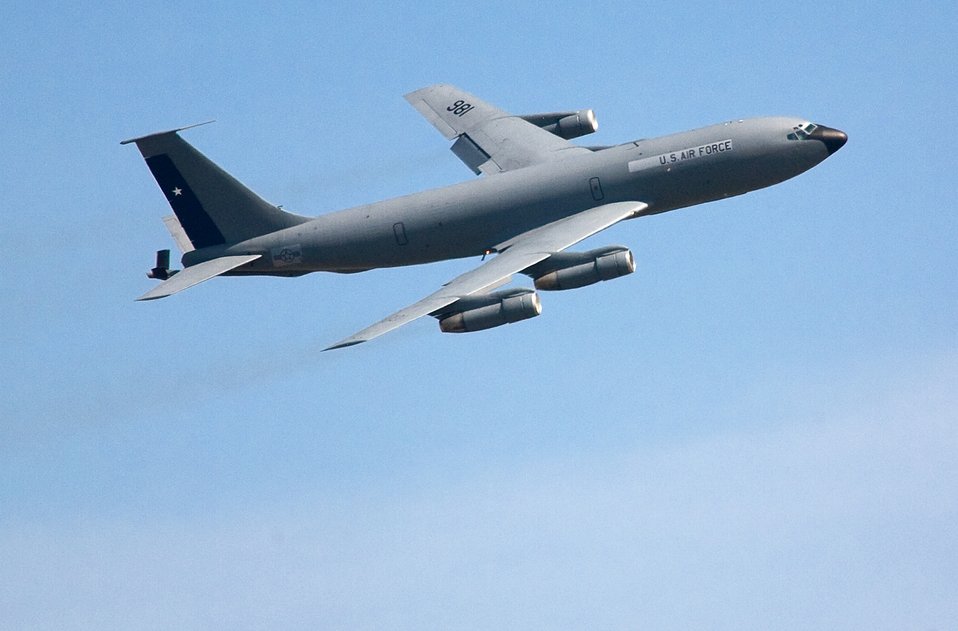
Chilean air force's latest tanker

Above Port San Antonio, a KC-135E Stratotanker completes a test flight over San Antonio on Feb 13, 2010. It is the first of three tankers to be delivered to the government of Chile through the U.S. foreign military sales (FMS) program. These tankers will augment their current fleet of Boeing 707-based tankers. The San Antonio Boeing Support Systems site specializes in several maintenance and modification processes for U.S. and international military customers. The two other tankers are at Boeing's San Antonio site for programmed depot maintenance before being delivered later this year. The aircraft is seen with transitional marking showing the permanent Chilean air force tail markings, and temporary decals of the U.S. Air Force on other areas for the delivery flight to Chile, when the aircraft arrived in Chile on Feb 16 the decals were peeled off revealing all the Chilean air force marking. FMS is managed and operated by DoD on a no-profit and no-loss basis. Countries and international organizations participating in the program pay for defense articles and services at prices that recoup the actual costs incurred by the United States. Air Force Security Assistance Center oversees system sales and support for more than 170 models of aircraft - a fleet totaling more than 6,600.